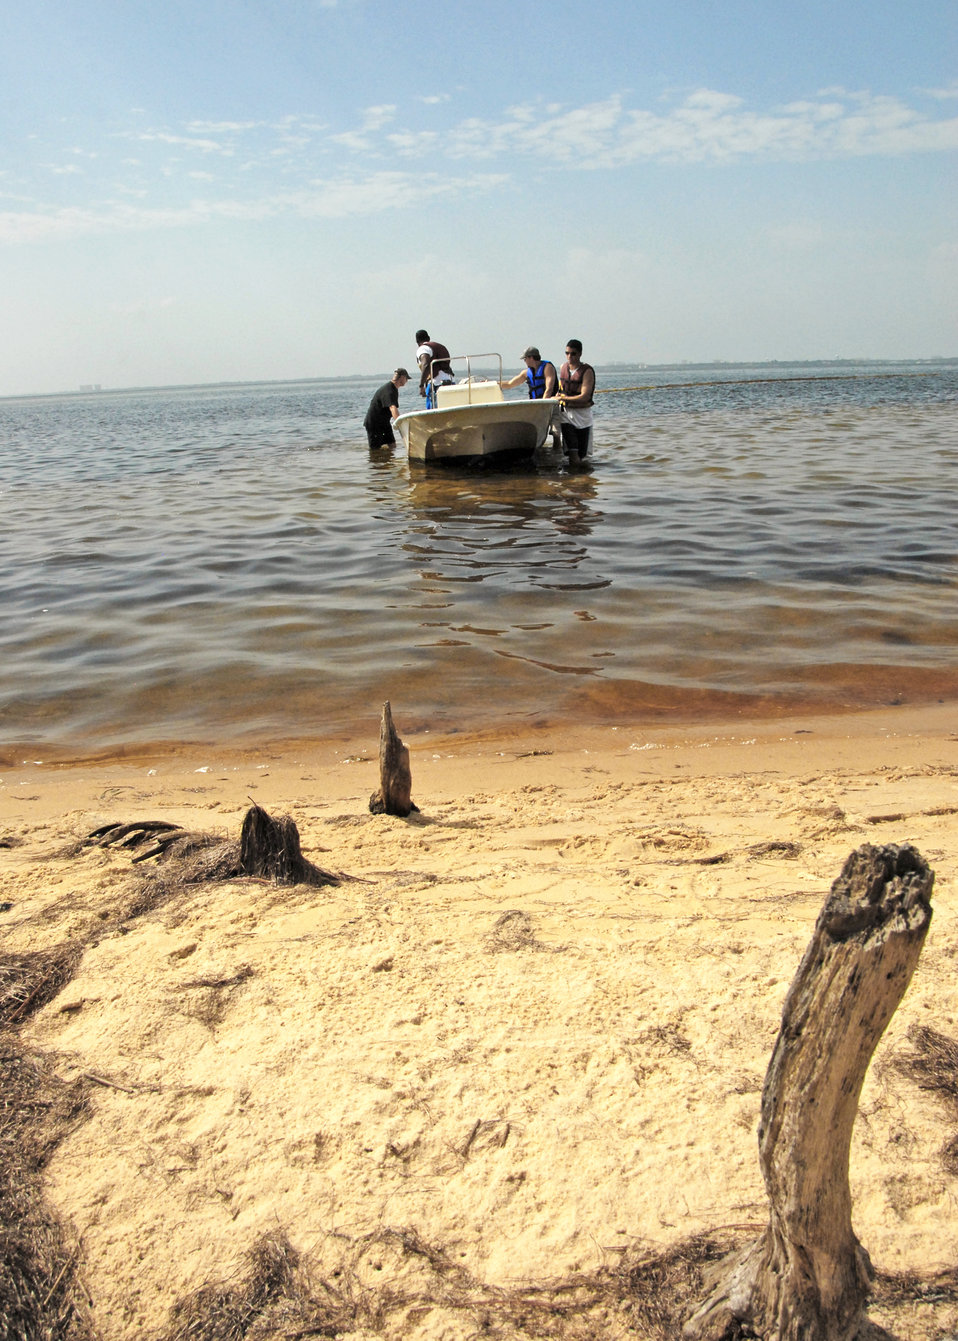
Eglin boom

Volunteers arrive at the shoreline towing 300 feet of boom to be installed in front of an inlet July 14, 2010, at Eglin Air Force Base, Fla. Boom is an oil containment device used to trap oil in the water so it can be collected before reaching the shore.